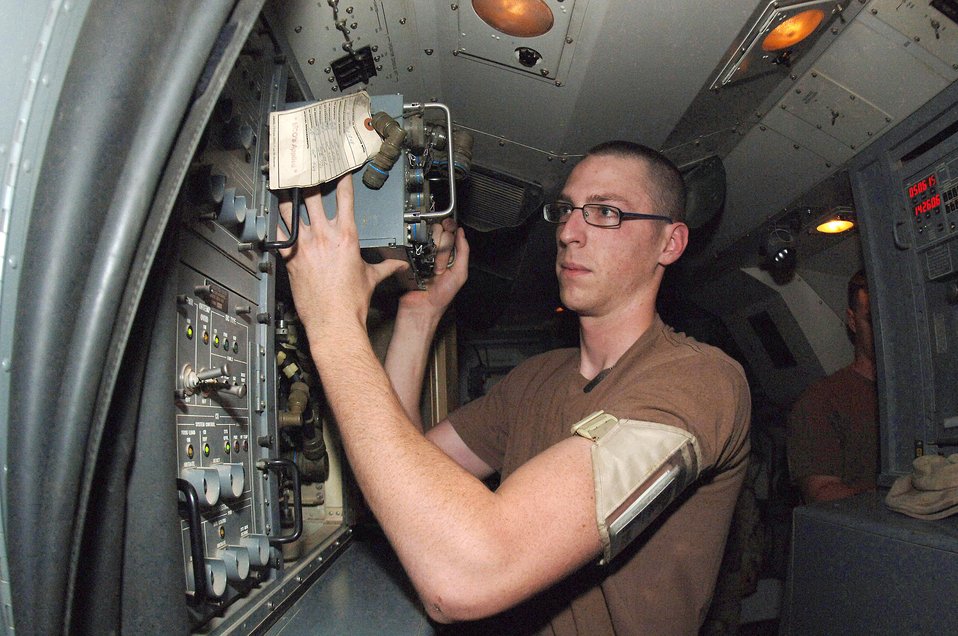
Airmen control sky over Iraq

BALAD AIR BASE, Iraq -- Senior Airman Marquis Perkins removes a computer unit for repairs. Senior Airman Perkins is assigned to the 727th Expeditionary Air Control Squadron and is deployed from Mountain Home Air Force Base, Idaho.